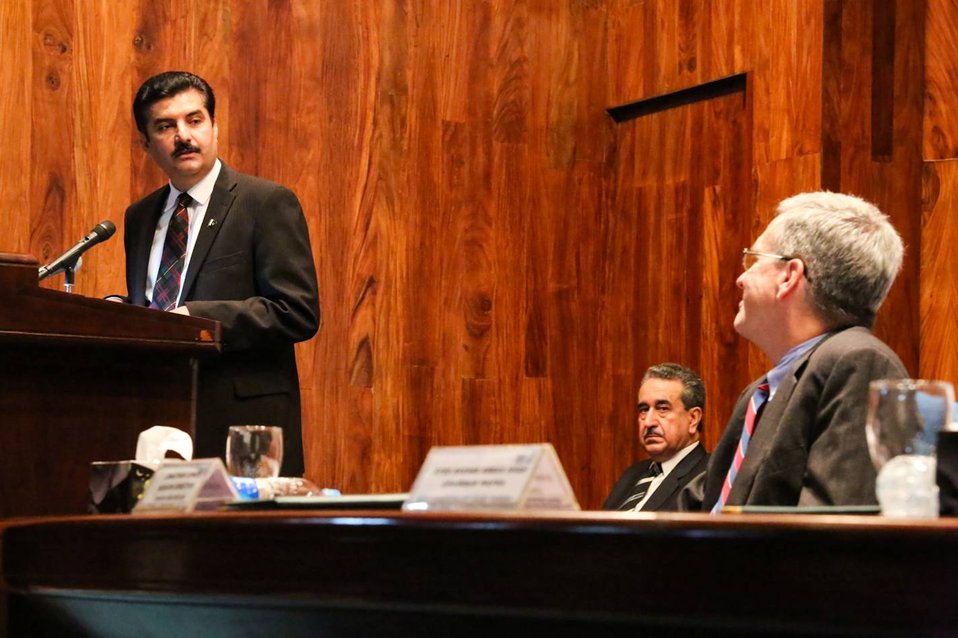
Islamabad, September 12, 2012 - Project Launch Ceremony of Waran Canal Irrigation System